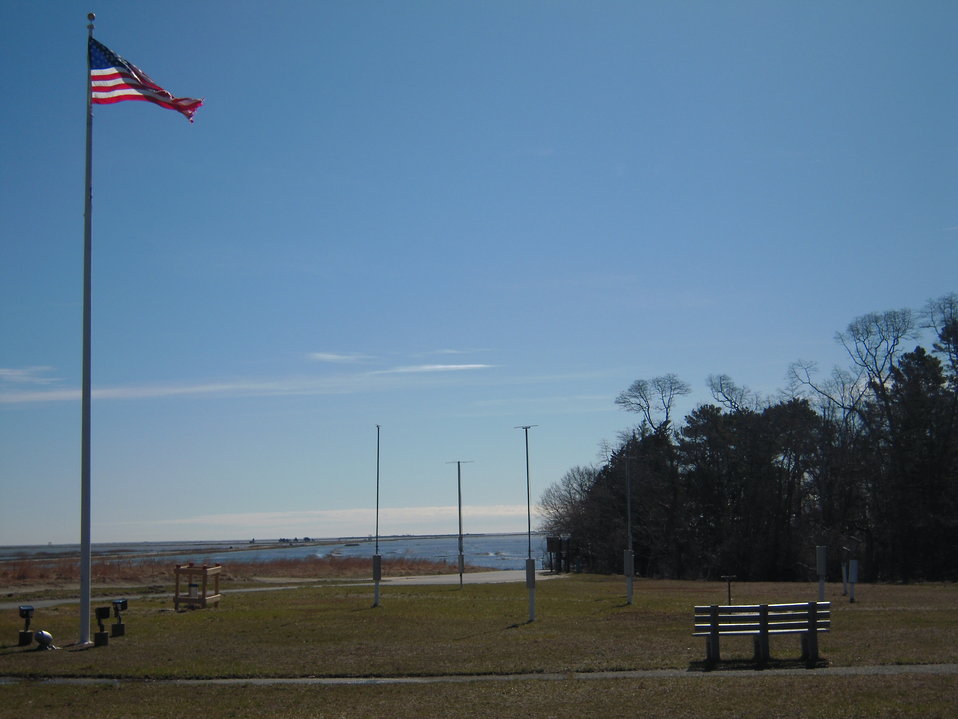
E.B. Forsythe NWR